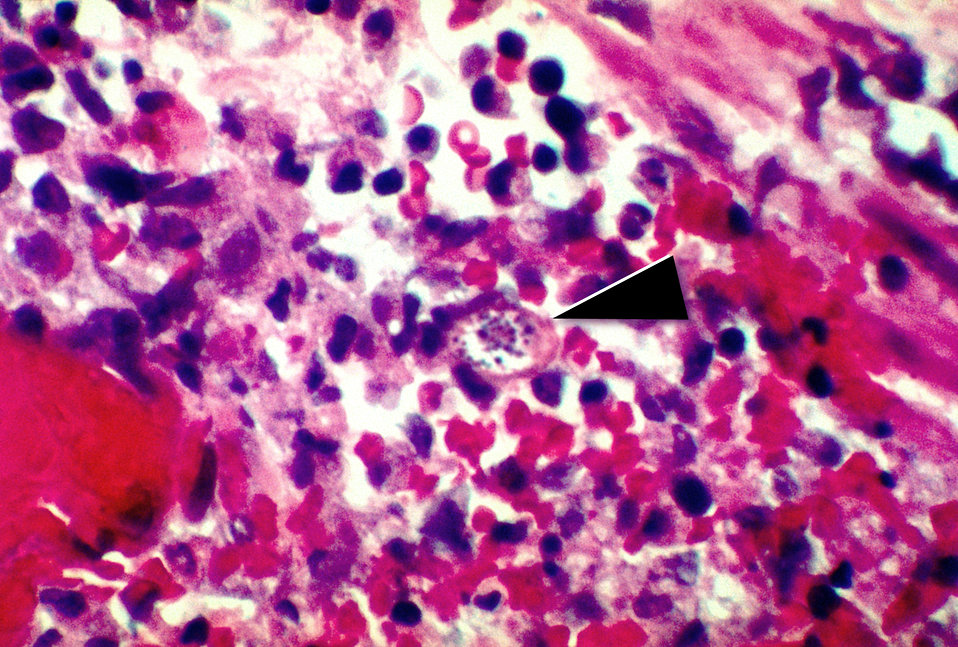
This micrograph reveals a Strongyloides stercoralis parasite embedded in the intestinal mucosa.